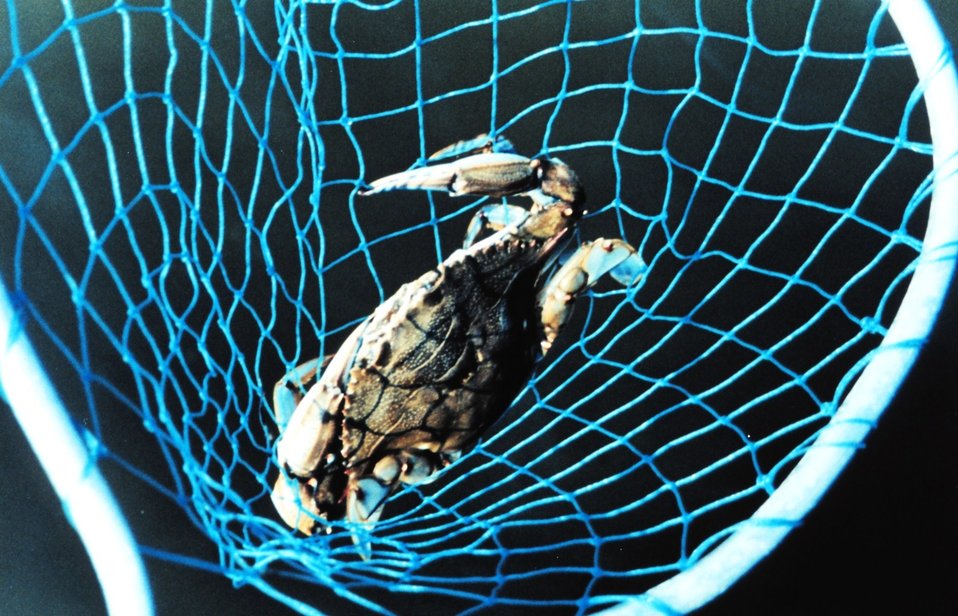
A Maryland Blue Crab, Callinectes sapidus, caught in a hand net.